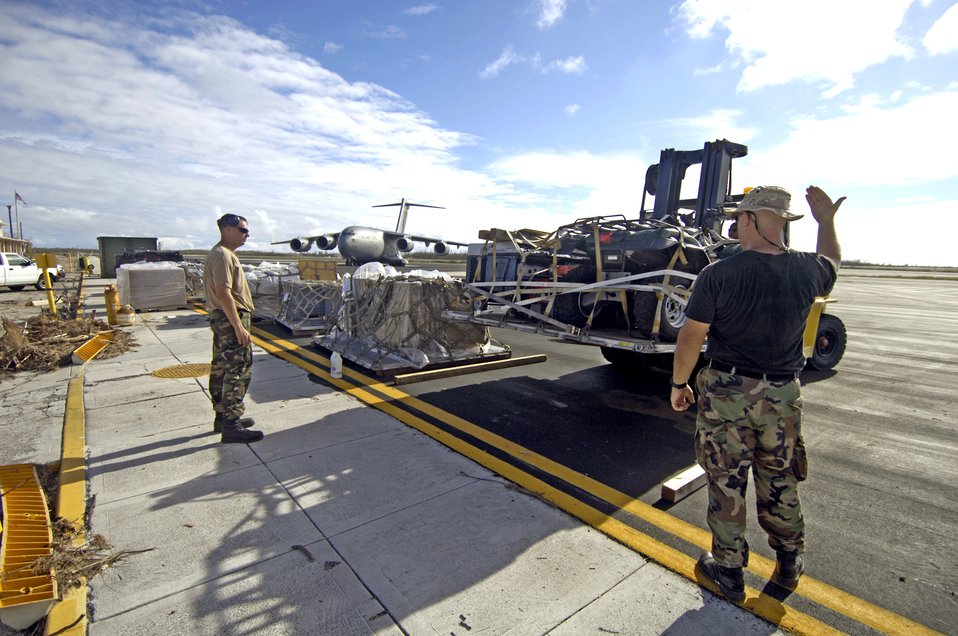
Teams fly to Wake Island to assess damage

Tech. Sgt. Timothy Galunas and Staff Sgt. Ronald White line up pallets on the Wake Island flightline Sept. 12 offloaded from the C-17 Globemaster III in the background. The Airmen are from the 36th Contingency Response Group at Andersen Air Force Base, Guam. They are assisting a 53-person team assessing damage left by Super Typhoon Ioke after it hit the island Aug. 31.